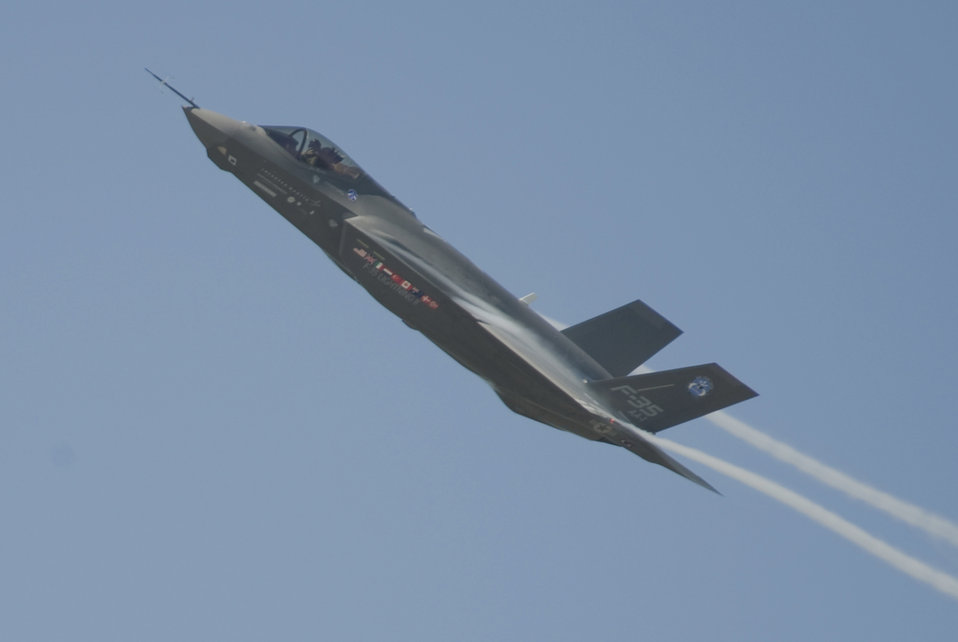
F-35 test plane flies over Eglin

The F-35 Lightning II Joint Strike Fighter test aircraft AA-1 banks over the flightline sending contrails streaming off the wings during its sortie April 23 at Eglin Air Force Base, Fla. The aircraft's first arrival at the base was to provide a showcase to base members and the local community.